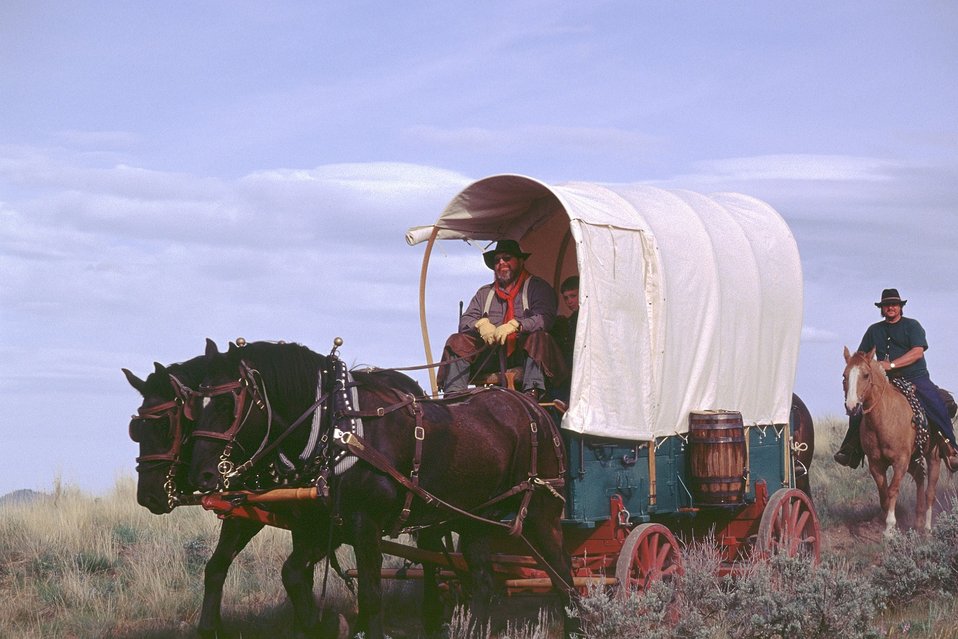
NHOTIC 10th Anniversary, wagon train reenactment. Pioneers on the Oregon trail.